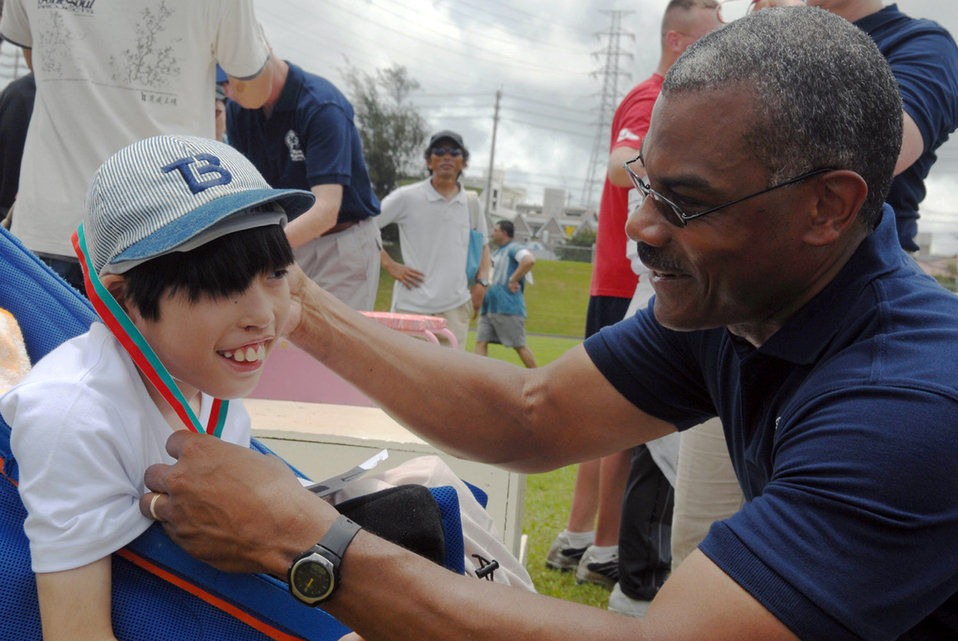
Kadena hosts Special Olympics

Yujiro Nakamura of the Awase Special Needs School receives his silver medal from Chief Master Sgt. Jack Johnson Jr. after competing in the softball throw event during the 2007 Special Olympic Games June 24 at Kadena Air Base, Japan. More than 1,500 people volunteered in this year's Special Olympics at Kadena AB. Chief Johnson is the 18th Wing command chief.